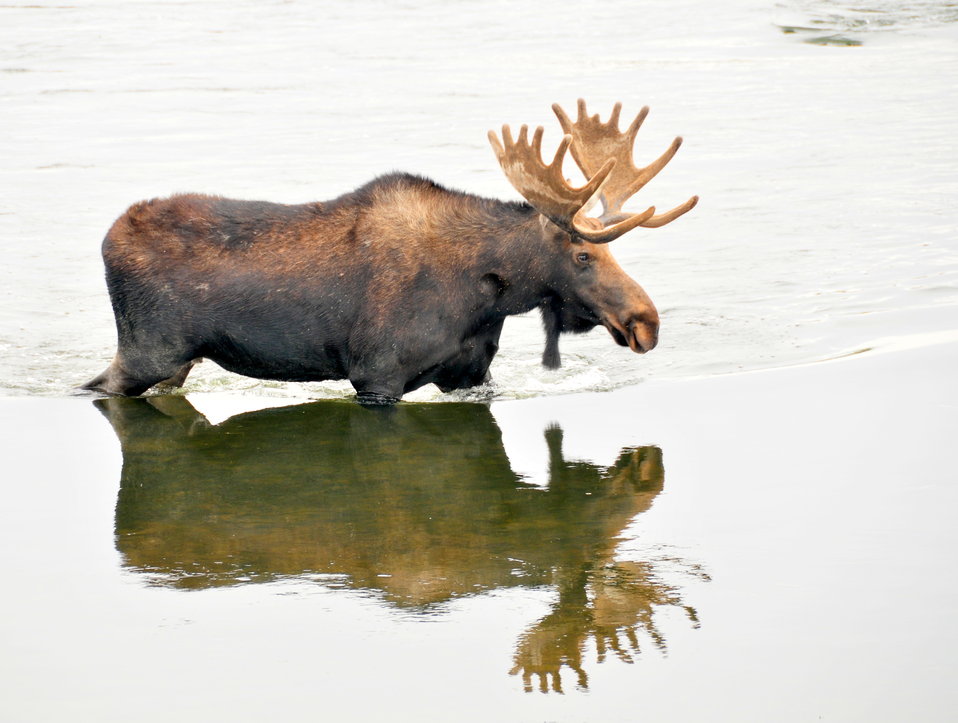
Shiras Moose Bull Crossing the Green River on Seedskadee NWR 1

A Shiras moose bull wades slowly across the Green River on a hot August afternoon.